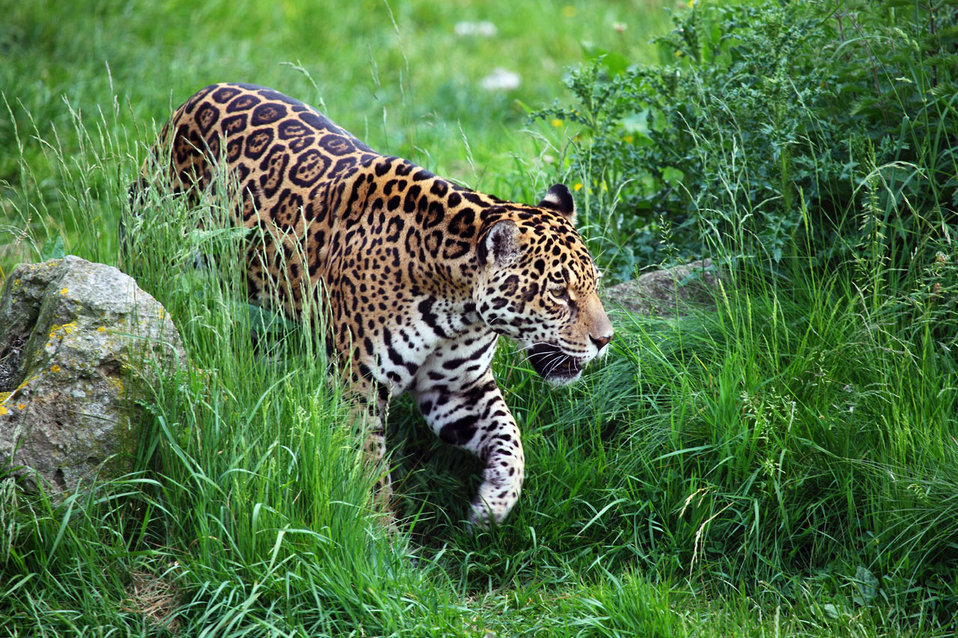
Jaguar walking in grass.